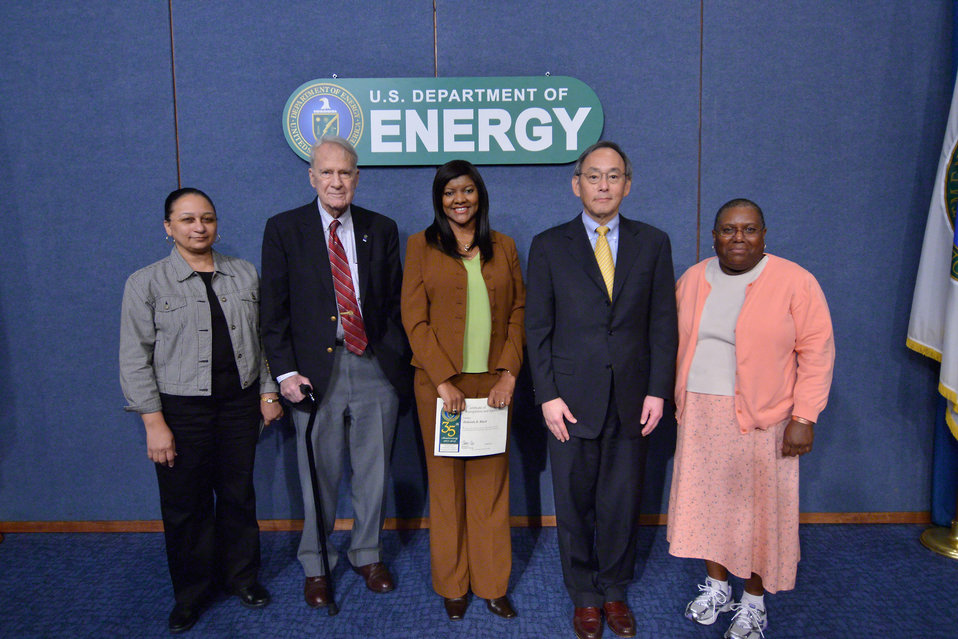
1 Management

Charter employees from the Office of Management with Secretary Steven Chu, current Secretary of Energy, and Secretary James Schlesinger, first Secretary of Energy.